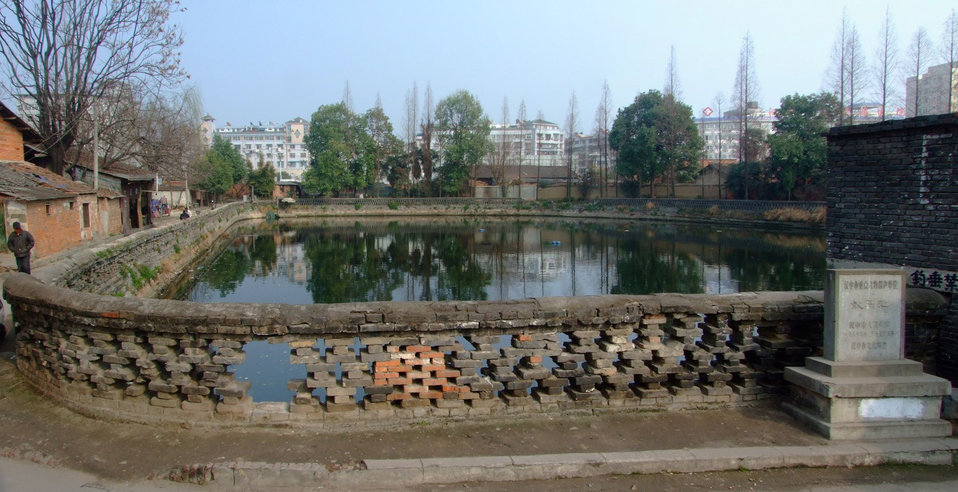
Yinma pool in Hanzhong,Shannxi,China 中文（简体）: 汉中饮马池，2009年3月